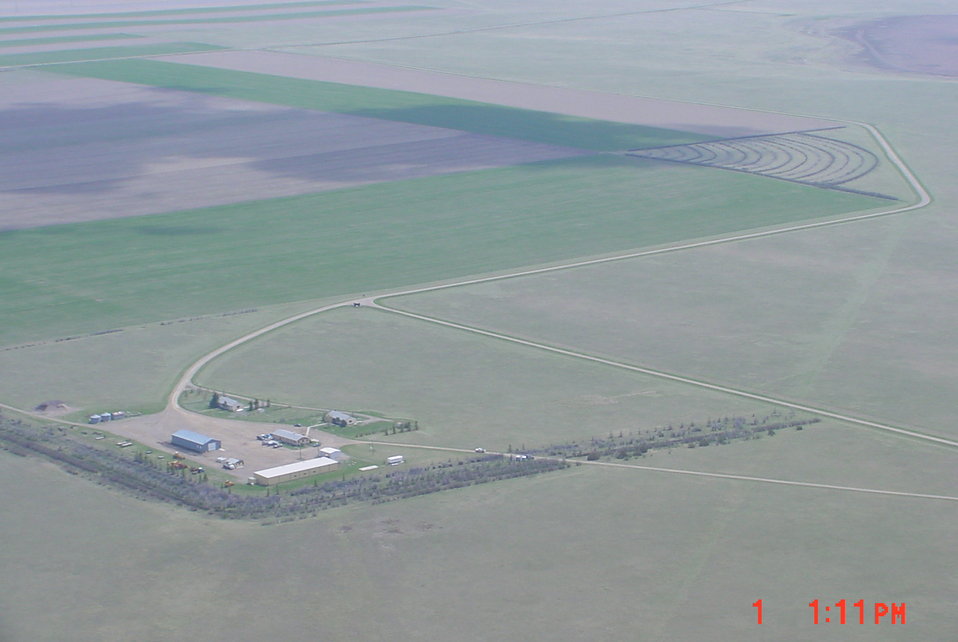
Aerial Photograph of Benton Lake

The lands of Benton Lake National Wildlife Refuge were established to protect and provide habitat for migratory birds that cross State lines and international borders and are by law a Federal trust responsibility.

The refuge is of great value to waterfowl and shorebirds, as well as other migrating water-dependent bird species, because of the diversity of wetland and upland habitats that provide for the diverse life cycle needs of these species.